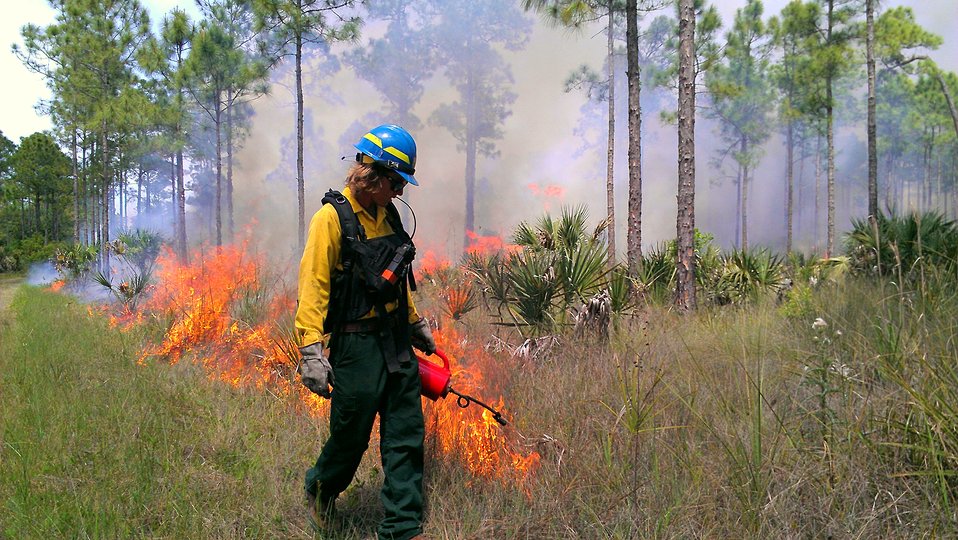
Florida Panther RX 04-04-14

Florida Panther NWR conducted a 704 acre prescribed fire on April 4th 2014 in the southeast corner of the refuge near I-75 and SR 29. Firefighters from Florida Panther NWR, Merritt Island NWR, J.N. Ding Darling NWR, ARM Loxahatchee NWR and Big Cypress NP all took part in this burn. Firefighter Connor Bowden uses a driptorch to ignite a portion of the prescribed fire at Florida Panther NWR.